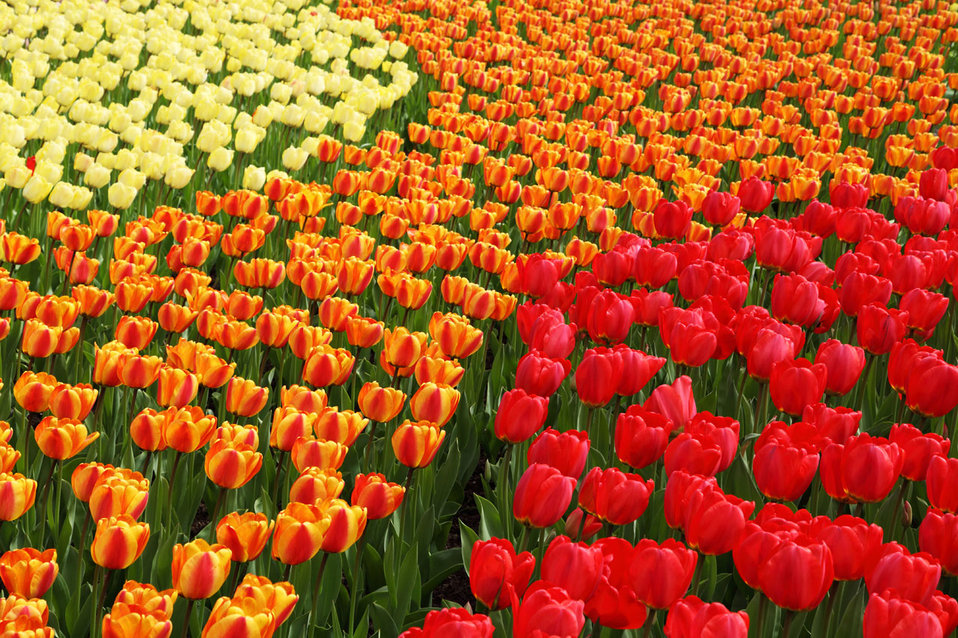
Yellow orange and red tulips in keukenhof.